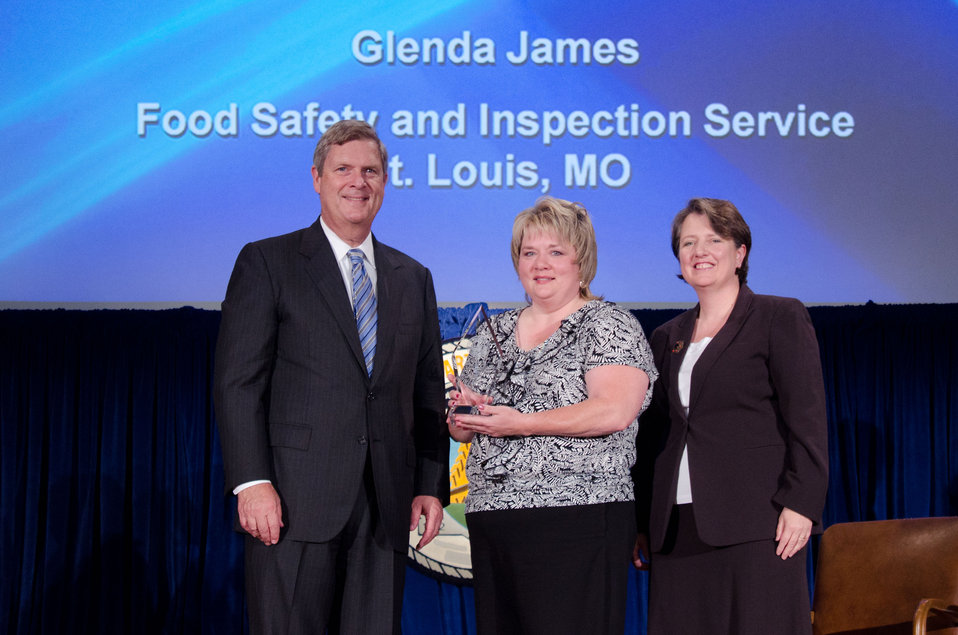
Agriculture Secretary Tom Vilsack (l) and Deputy Secretary Kathleen Merrigan (r), presents the Award for heroism and Emergency response to Glenda James. Food Safety and inspection service, St. Louis, Mo. For your resourcefulness in utilizing all available resources to locate an employee in need. Your quick and compassionate actions aided in saving the life of one our our fellow employees. On Wednesday, September 14, 2011 in the Jefferson Auditorium at the US Department of Agriculture in Washington, DC.